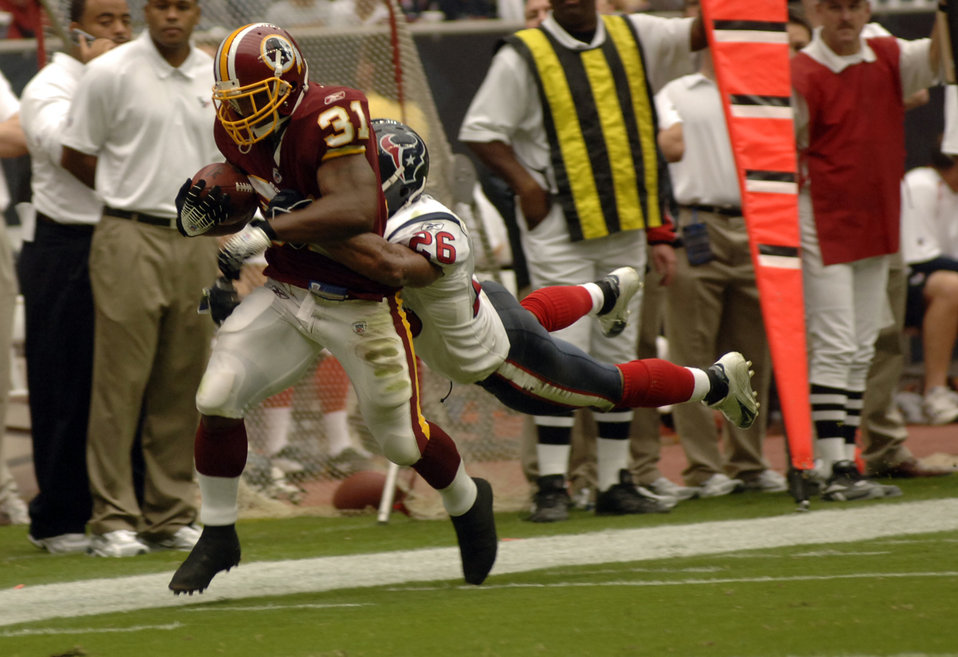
The Texans honored military servicemembers in their Salute to the Military day

Washington Redskins running back Rock Cartwright is tackled by Houston Texans strong safety Glenn Earl during the Redskins 31 to 15 victory at Reliant Stadium in Houston Sept. 24. The Texans honored military servicemembers in their Salute to the Military day.